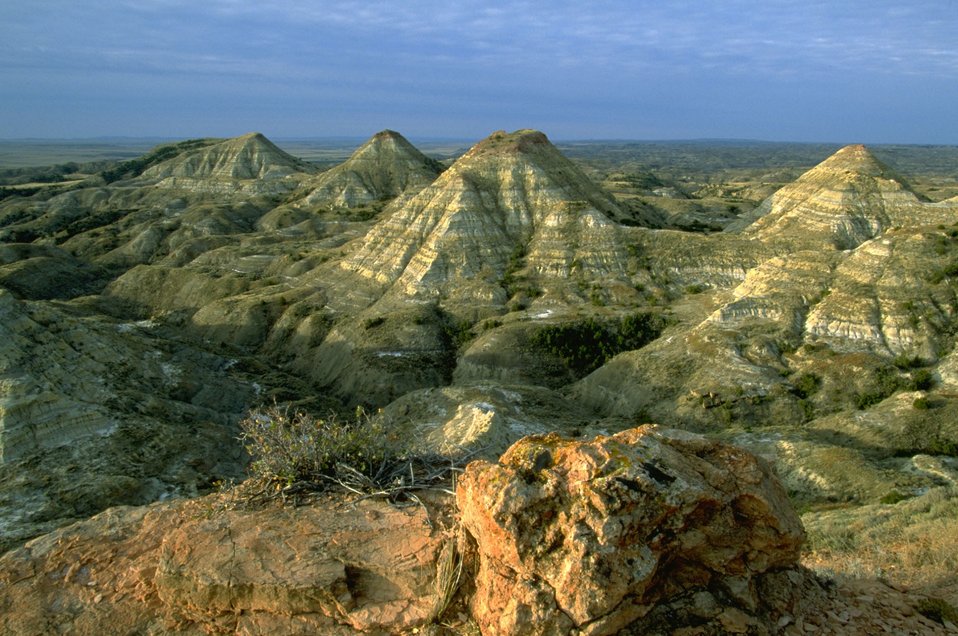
Beautiful view of the Terry Badlands